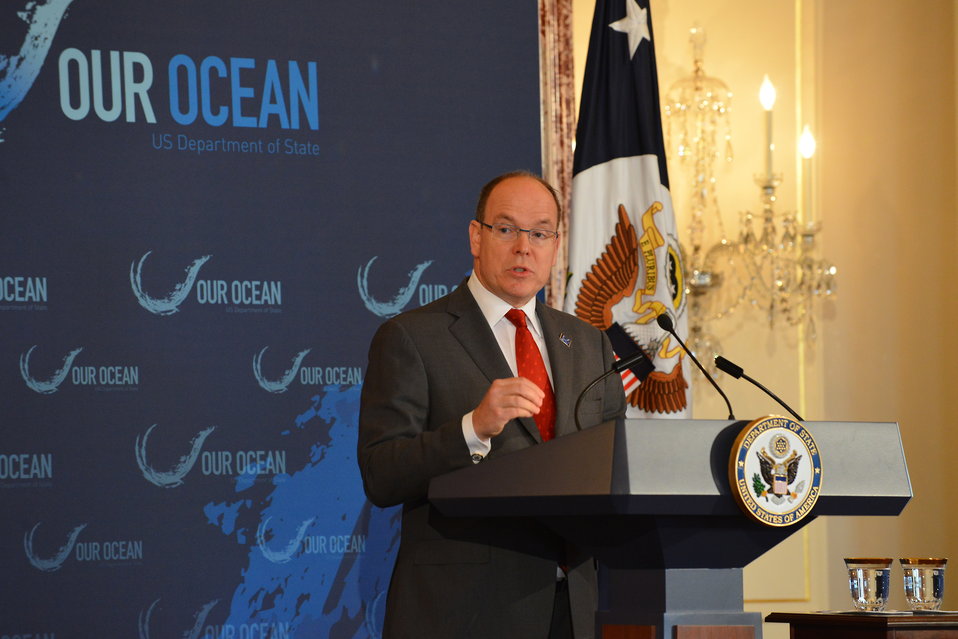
Prince Albert II of Monaco delivers remarks at the “Our Ocean” Conference lunch discussion at the U.S. Department of State in Washington, D.C. on June 16, 2014.